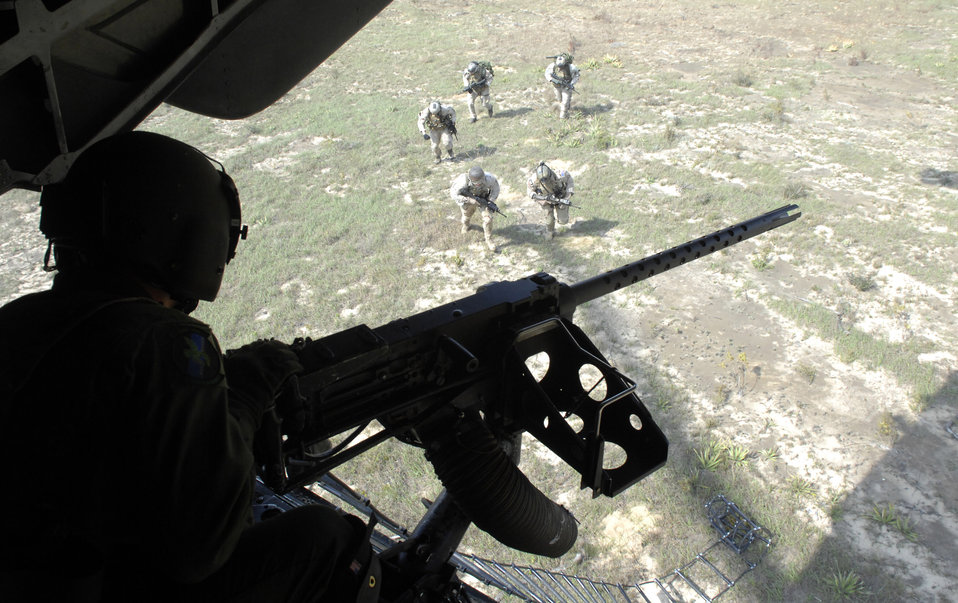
Top cover

Pararescuemen from the 720th Special Operations Squadron run to board a MH-53 Pave Low during a training mission at Hurlburt Field, Fla